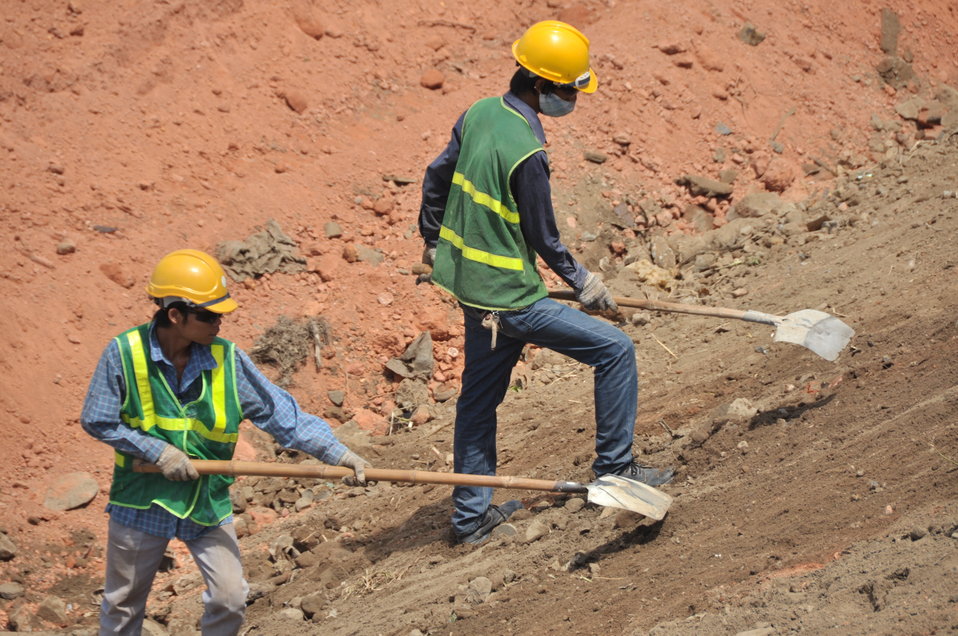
Site construction at the Environmental Remediation of Dioxin Contamination at Danang Airport

Progress at the Danang Airport remediation site
April 23, 2013